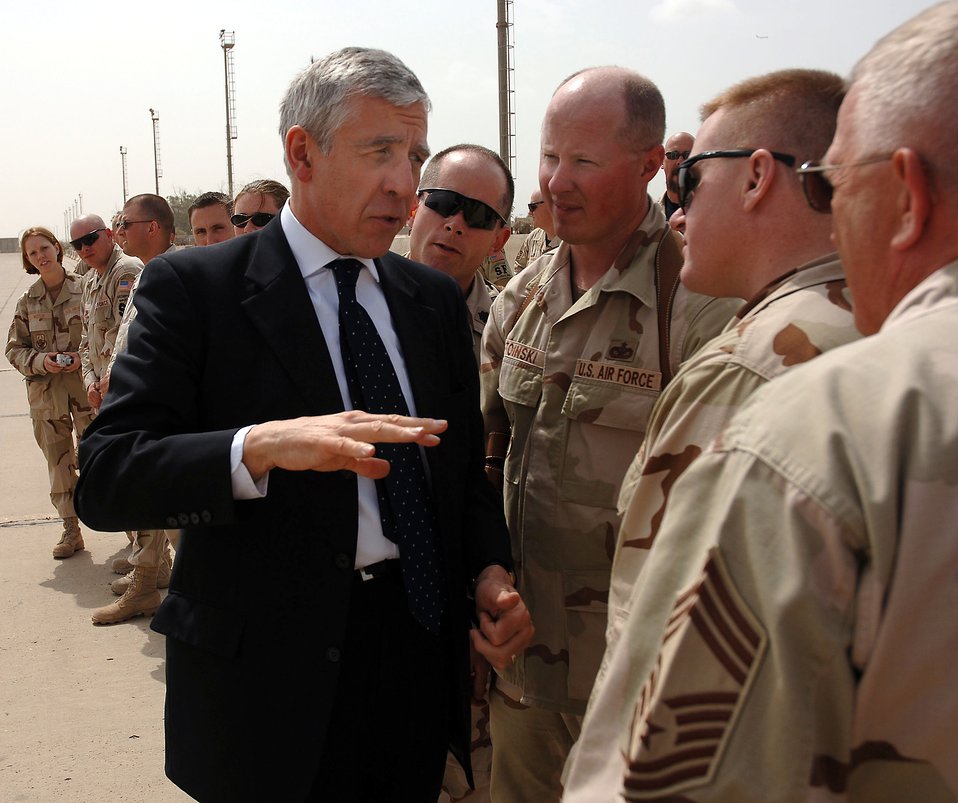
Secretary of state visits Iraq

Jack Straw, United Kingdom foreign secretary, talks to Master Sgt. Alan Stoinski and Capt. Troy Basnett at Sather Air Base, Iraq, on Monday, April 3, 2006. Mr. Straw and Condoleezza Rice, U.S. secretary of state, traveled through the military aerial port at Sather after meeting with Iraqi officials in Baghdad.